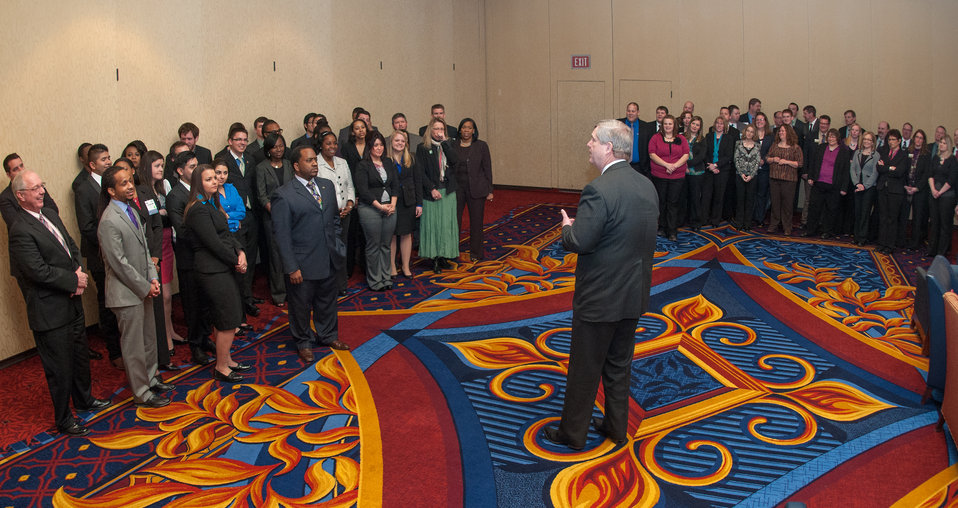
Agriculture Secretary Tom Vilsack spoke with and took questions from the U.S. Department of Agriculture (USDA) Agricultural Outlook Student Diversity Program competitive essay winners, and members of the South Dakota Agricultural and Rural Leadership, Inc. (SDARL) at the 2013 Agricultural Outlook Forum, held at the Crystal Gateway Marriott Hotel, Arlington, Virginia on Thursday, Feb. 21, 2013. This annual Forum brings together producers, policymakers, and business, government, and industry leaders to meet, exchange ideas, and discuss timely agriculture issues. SADRL is a 501c3 not for profit organization offers a leadership program for agriculture and rural communities.